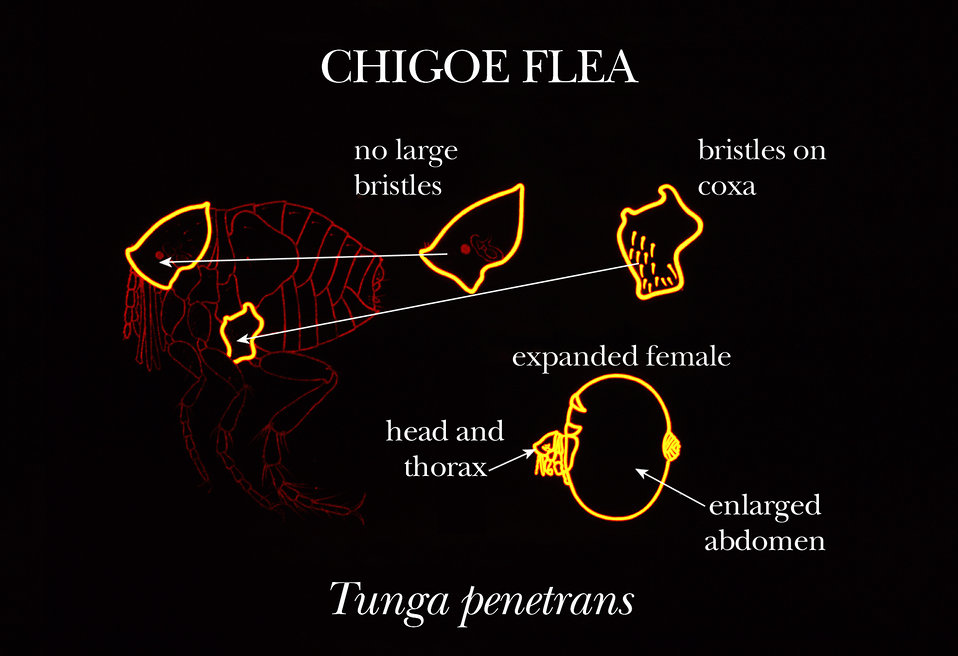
This illustration shows some of the identifying morphologic characteristics of the chigoe flea, Tunga penetrans.